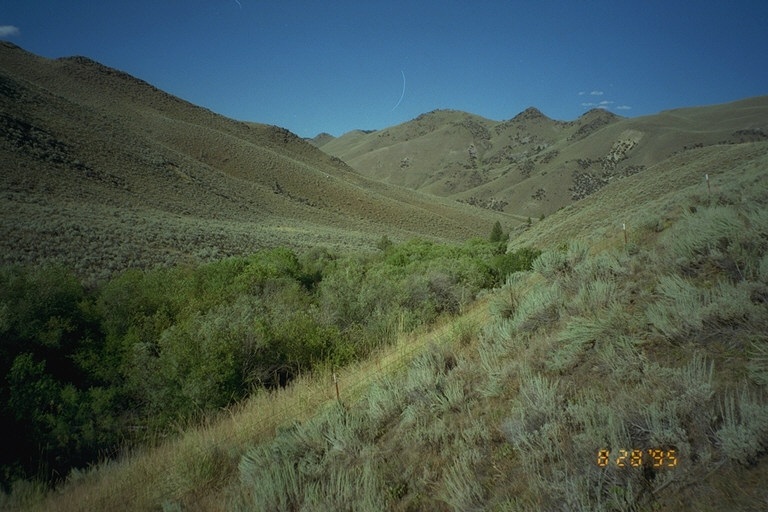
Riparian area Public Lands Salmon Field Office UCSC Upper Columbia Salmon Clearwater District